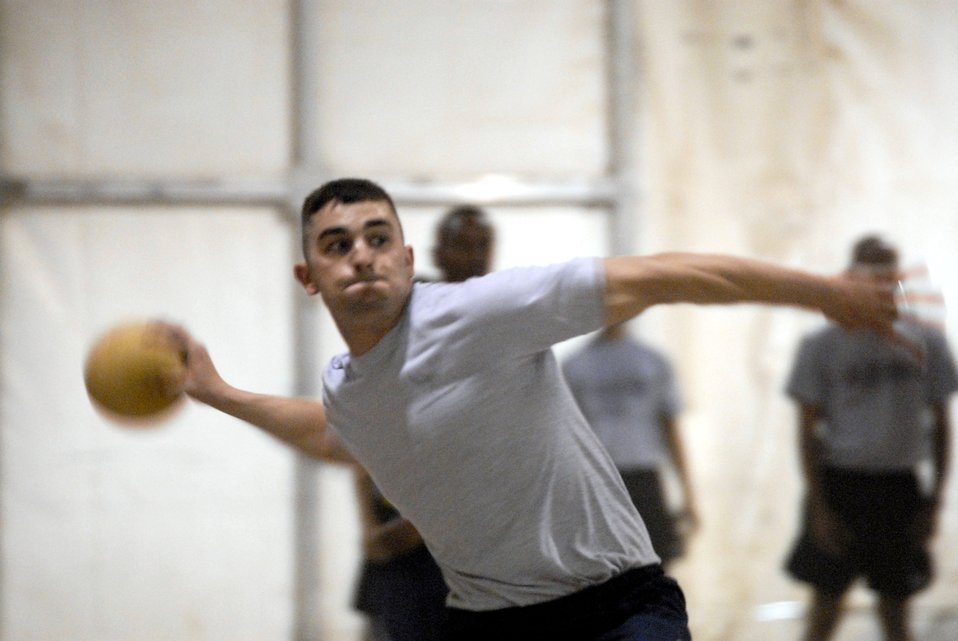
Coalition Forces compete at Ali Base

Senior Airman Lee Davis throws a dodge ball during the first ever coalition games held Aug. 25 at Camp Adder and Ali Base, Iraq. The Air Force team took first place in the event. The coalition games brought together teams from the U.S. Air Force, Army and Navy, along with Australians and Romanian teams to compete for barging rights as the best on base. The U.S. Air Force came out on top, taking first place in five events. Airman Davis is a member of the 407th Expeditionary Communications Squadron at Ali Base.